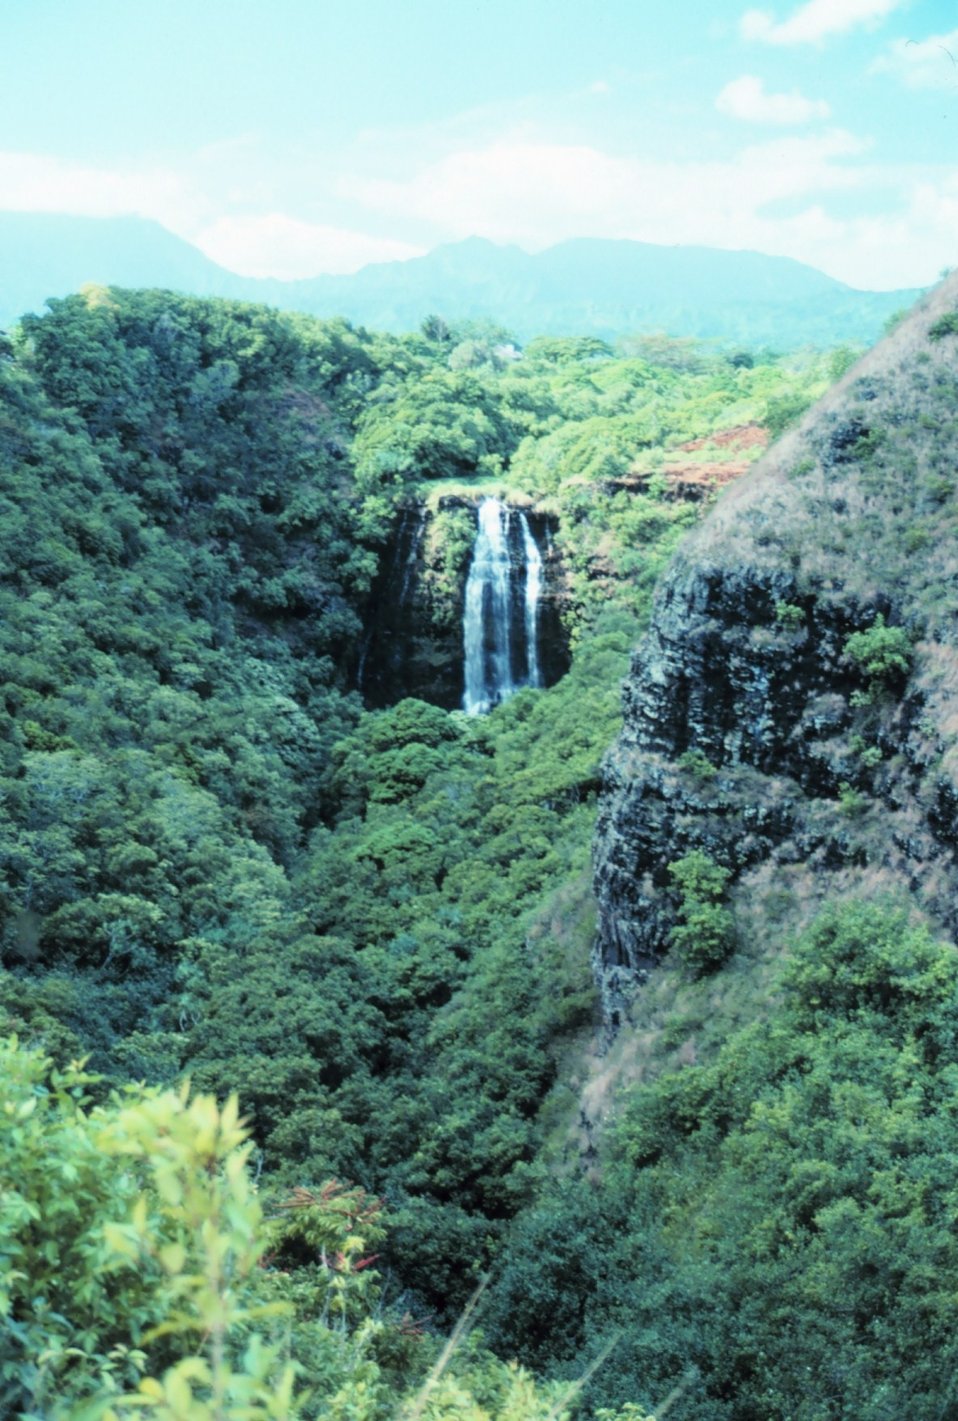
A waterfall on Kauai